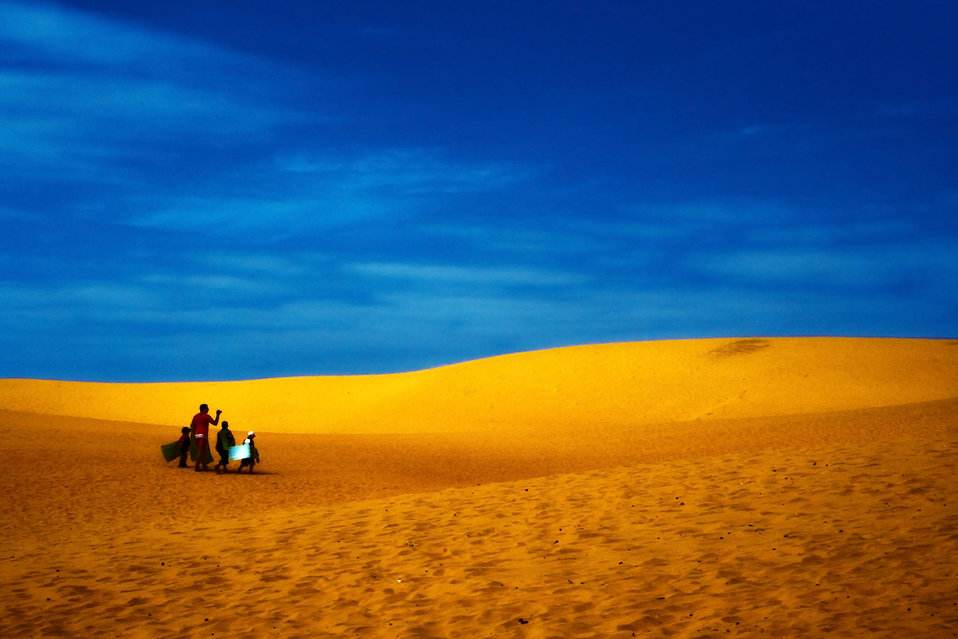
Mui ne sand dunes #2

Sand dunes of mui ne, phan thiet, vietnam..